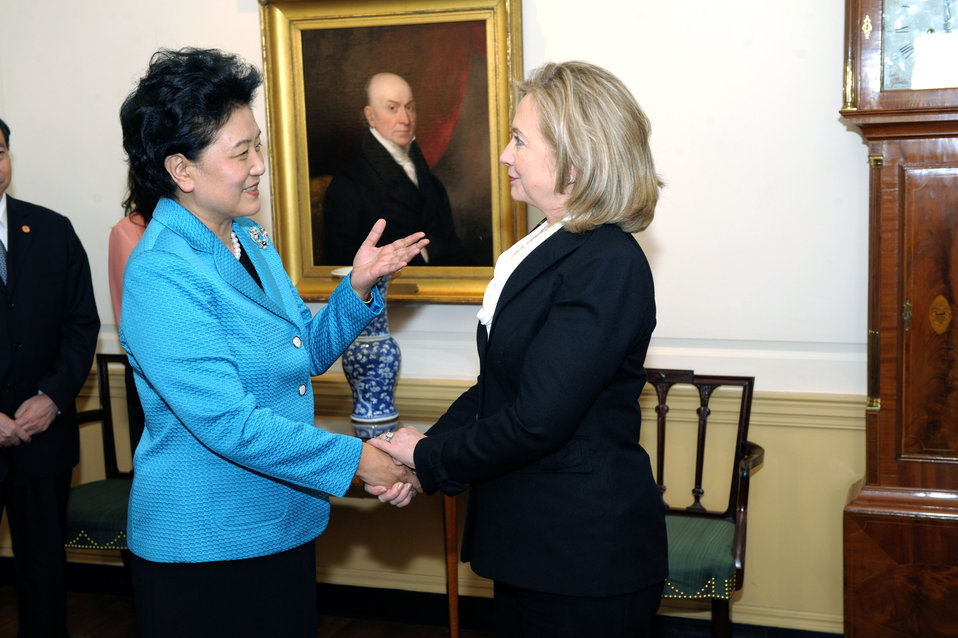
Secretary Clinton Shakes Hands With Chinese State Councilor Liu Yandong

U.S. Secretary of State Hillary Rodham Clinton shakes hands with Chinese State Councilor Liu Yandong during the U.S.-China Consultation on People-to-People Exchange delegation, at the U.S. Department of State in Washington, D.C., on April 12, 2011.